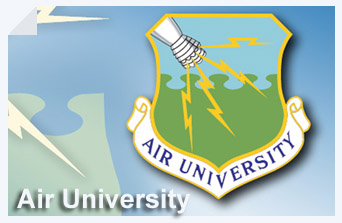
Air University, with headquarters at Maxwell Air Force Base, Ala., is a key component of Air Education and Training Command, and is the Air Force's center for professional military education.